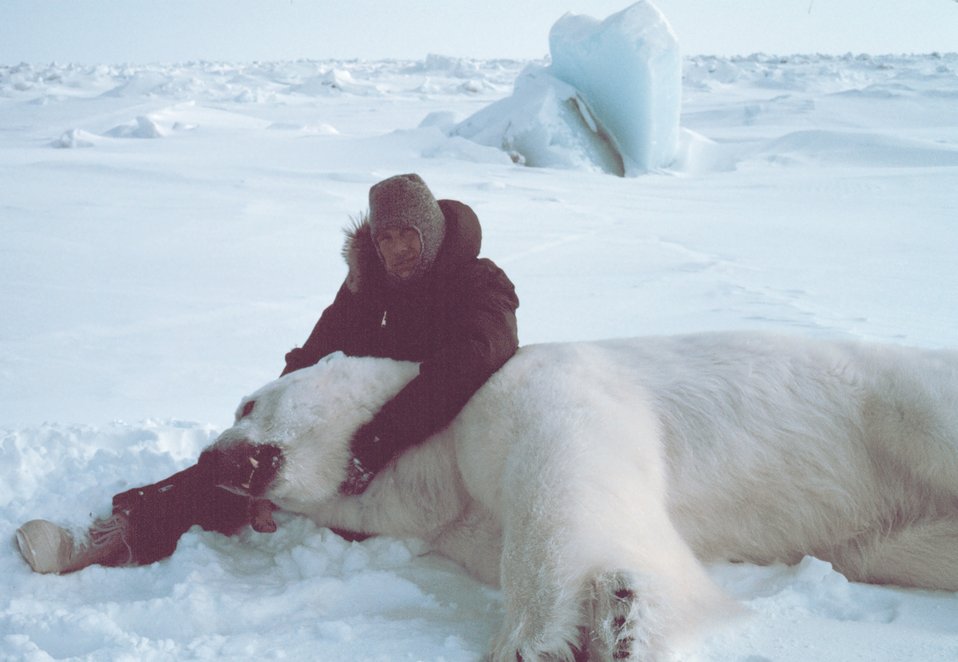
Steve Amstrup of USFWS with large sedated polar bear - Ursus maritimus. Bears were measured and tagged for future study. This sedated male was ready for the WWF with a 45 inch neck and weighing about 1400 pounds.